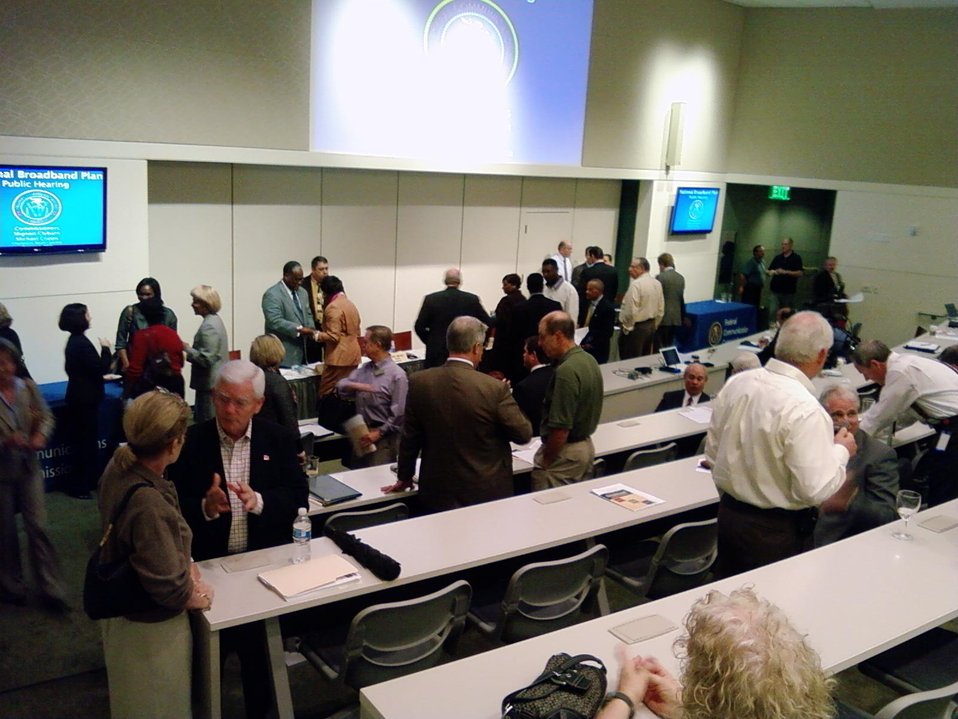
SC event 17

Broadband Field Hearing, in Charleston, South Carolina. 10-06-09